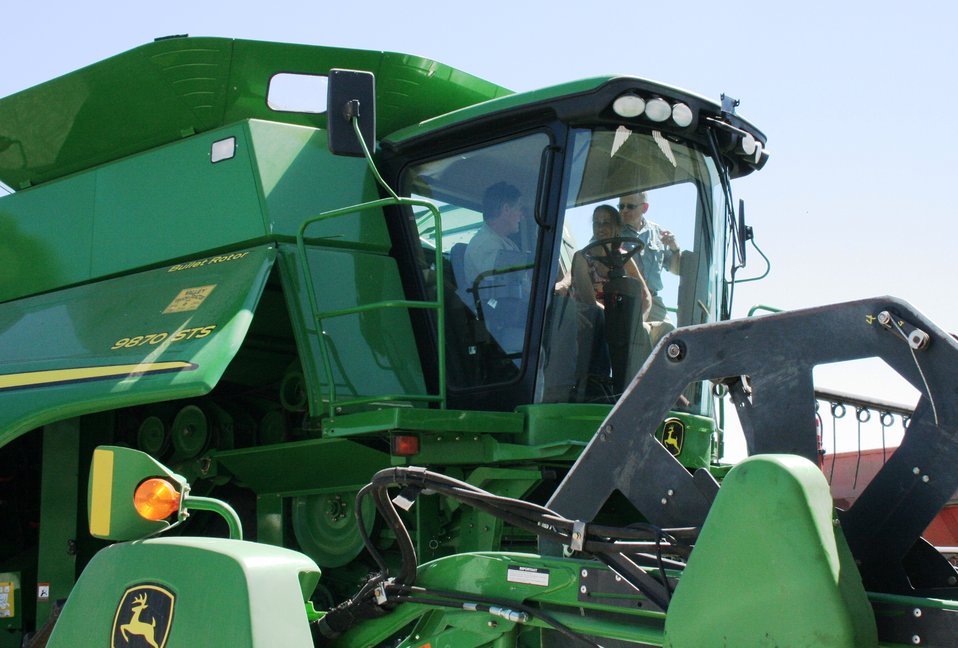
FDA's Rice Tour: Looking for Insights on Arsenic (0846)

FDA Commissioner Margaret A. Hamburg and colleagues visited research facilities and rice farms in California on Sept. 4-5, 2013 in an effort to gain a greater understanding of the presence of arsenic in rice. At the Lyle Job farm in Richvale, Calif., Job, Hamburg and FDA's Deputy Commissioner for Foods and Veterinary Medicine Michael Taylor are shown aboard a rice harvester. For more information, read the FDA Voice blog:

• On Farms and in Labs, FDA and Partners Are Working to Get Answers on Arsenic in Rice